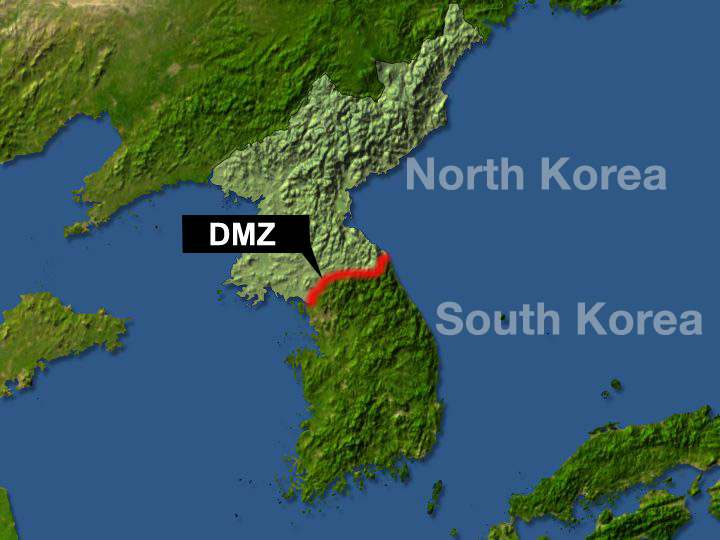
Map of Korea.